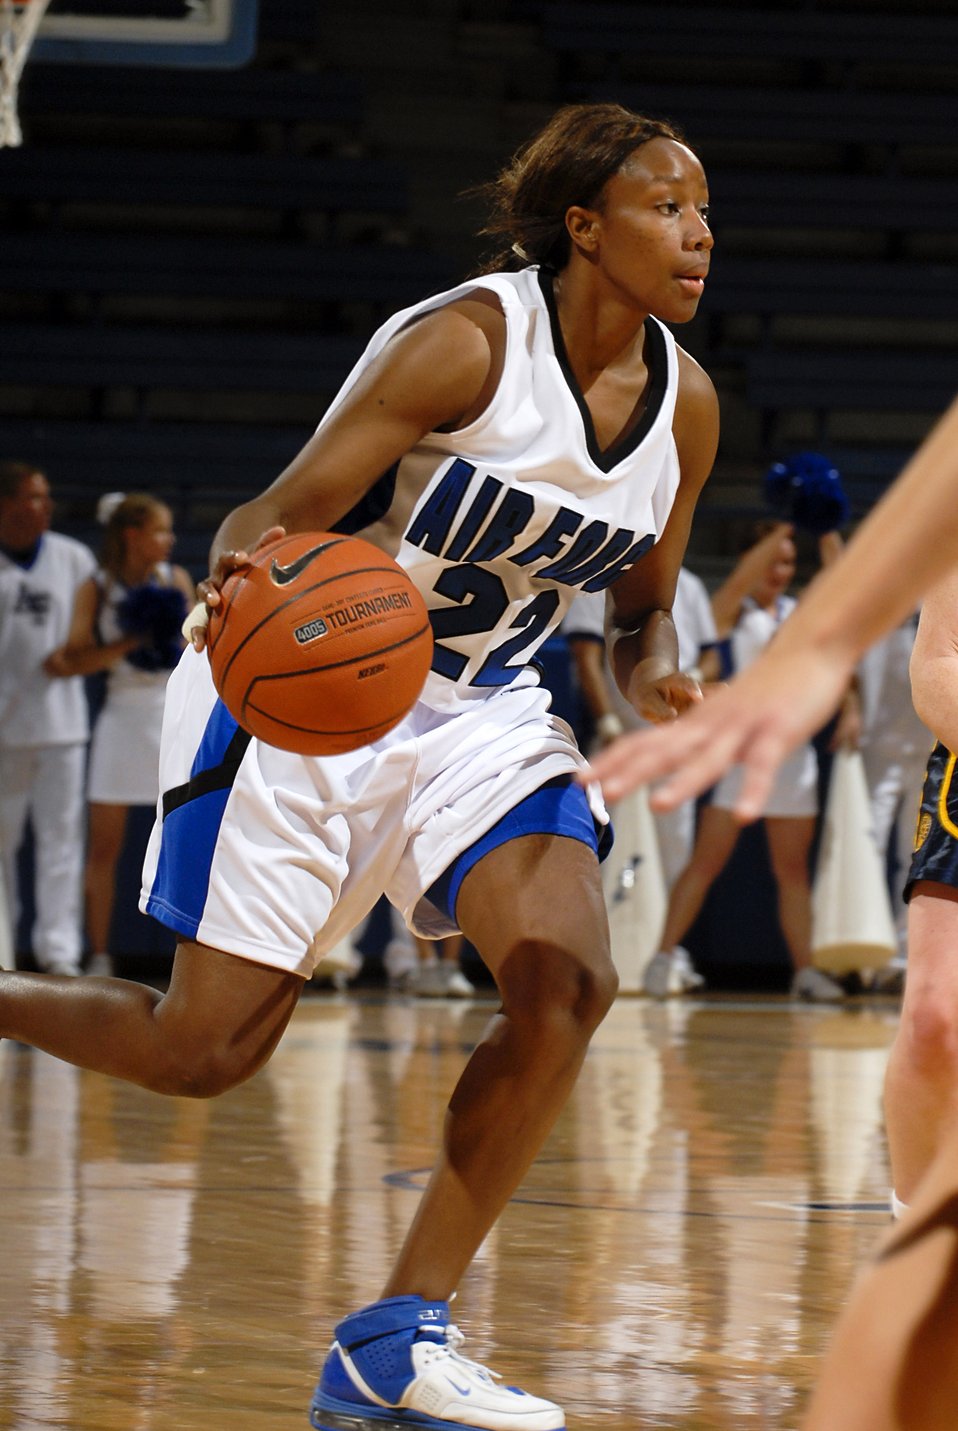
Basketball: Air Force coasts to 89-52 exhibition win over Regis

Air Force Academy senior guard Jamie Davis runs the floor during the Falcons, 89-52 exhibition victory over Regis University Nov. 3 at the Academy's Clune Arena. Air Force opens its regular season Nov. 9 at Oklahoma State.